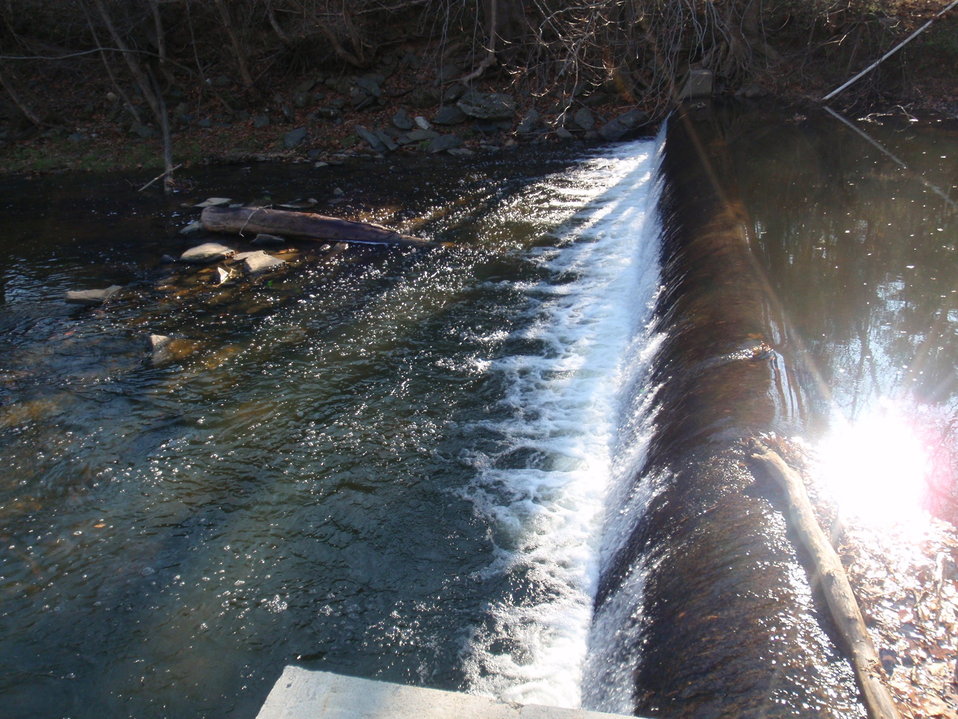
Close-up view of Veterans Memorial Park Dam in the Town of Rocky Mount, Franklin County, Virginia. The Virginia PFW is proposing to remove the dam to restore habitat for the federally endangered Roanoke logperch.